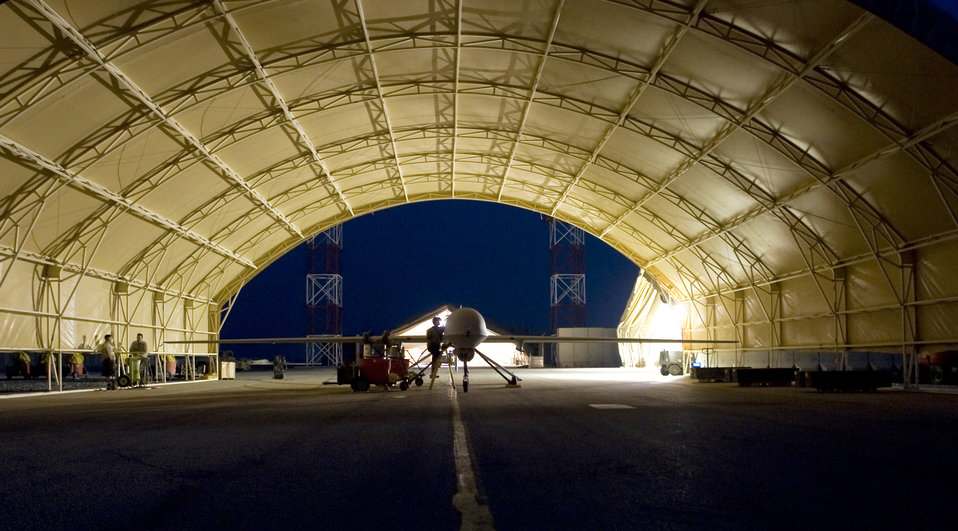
Aug. 15 airpower summary: Predator eliminates enemy threat

An MQ-1 Predator goes through post-flight maintenance in Iraq. The Predator provides integrated and synchronized close-air combat operations, including intelligence, surveillance and reconnaissance, to ground commanders.